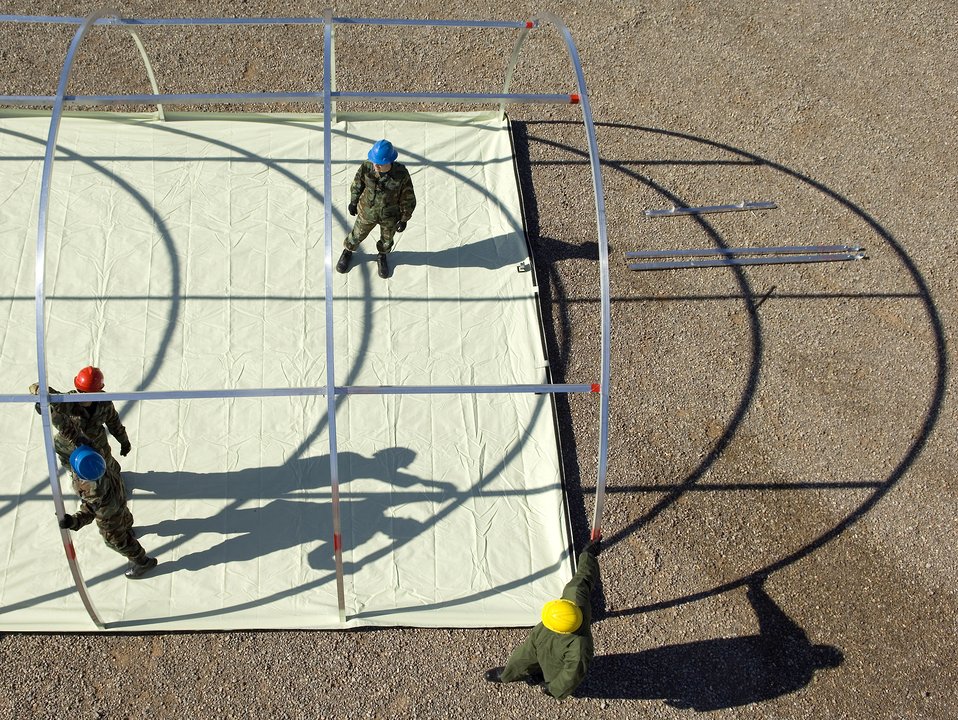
Providing shelter is a BEAR

Airmen from the 49th Material Maintenance Group work to build a small shelter system during a Jan. 16 exercise at Holloman Air Force Base, N.M. Members of the 49th MMG can build a Basic Expeditionary Airfield Resource, or BEAR, in austere conditions anywhere in the world. Airmen of the 49th MMG maintain a constant state of readiness and can be tasked to support any Department of Defense or Federal Emergency Management Agency humanitarian operations along with primary duties of supporting combat operations.